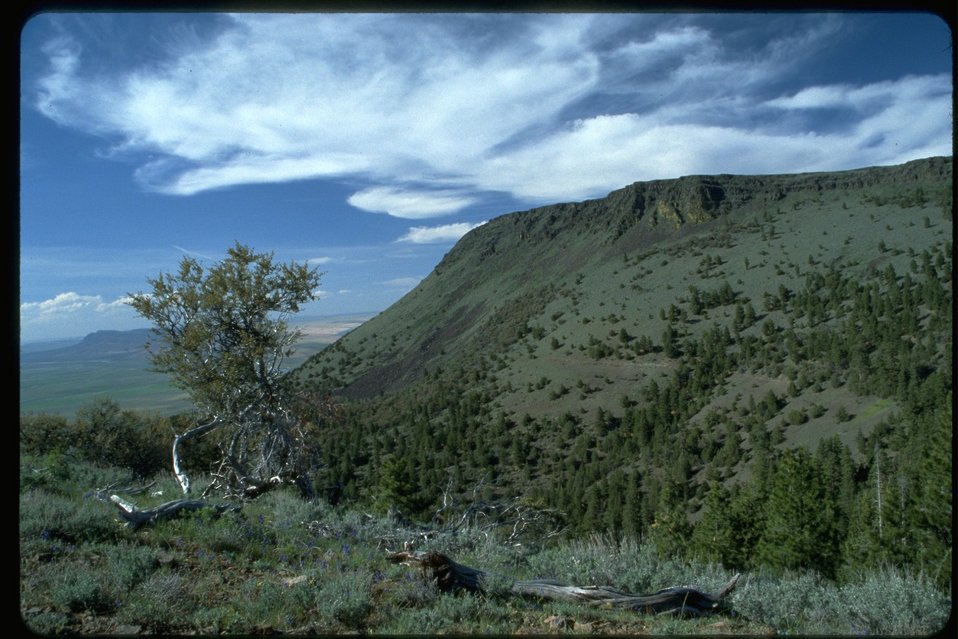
Abert Rim, view from Forest Service Hang Glider Site.